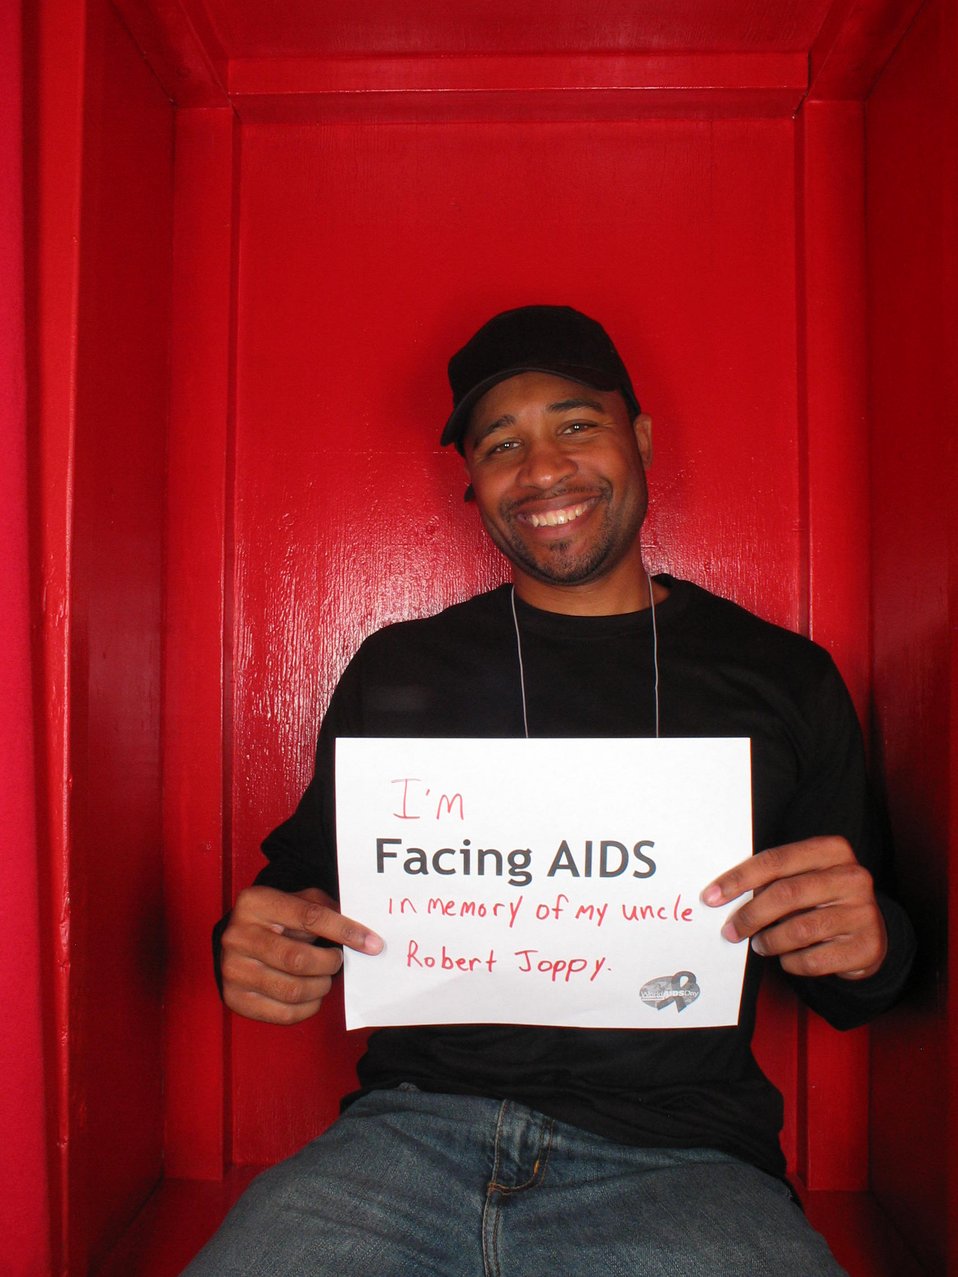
I'm Facing AIDS in memory of my uncle.